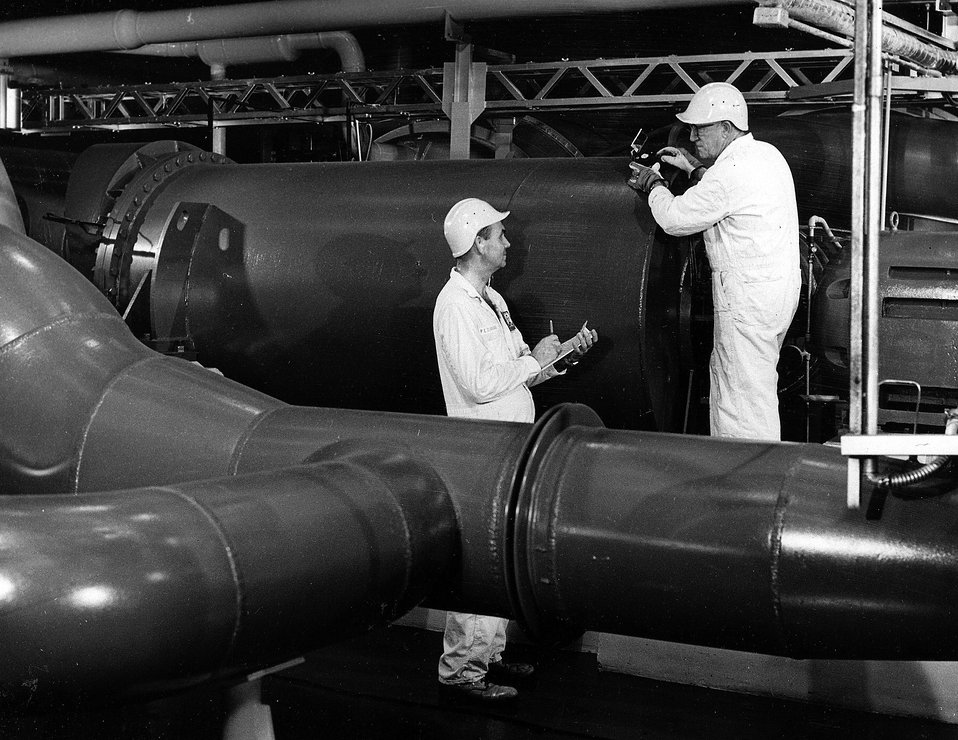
Miles and miles of piping and other large equipment fill the Energy Research and Development Administration's Gaseous Diffusion Plant at Oak Ridge, Tennessee.